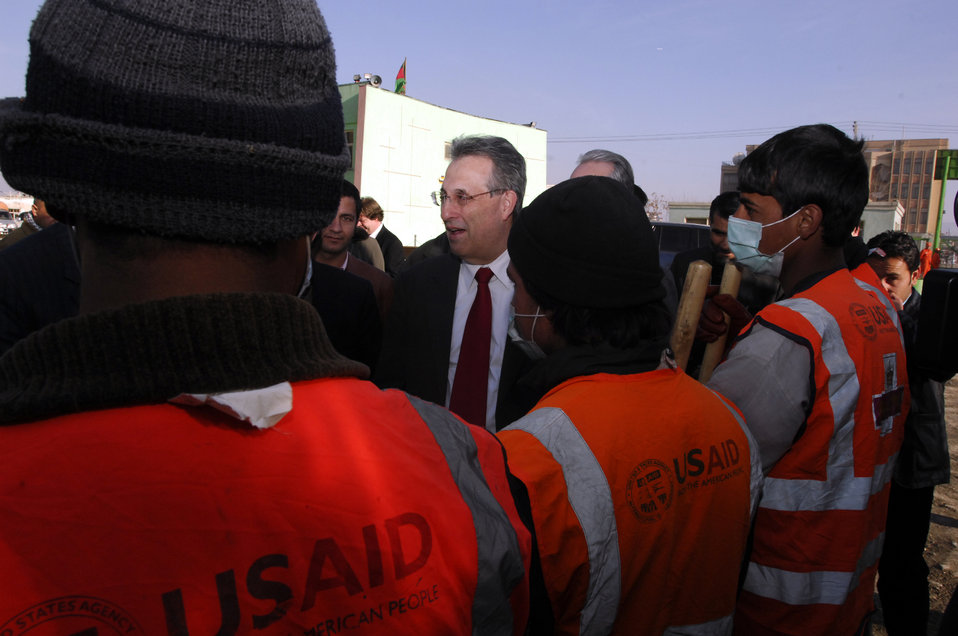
Care85